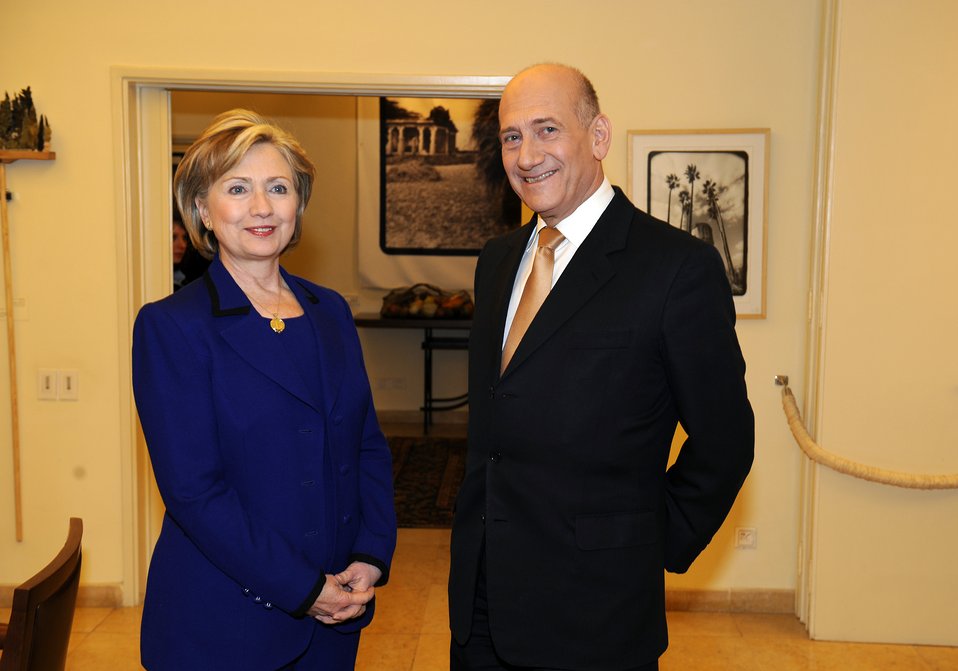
Secretary Clinton Visits Israeli Prime Minister Residence

U.S. Secretary of State Hillary Rodham Clinton during visits Prime Minister Ehud Olmert's Residence, Jerusalem, March 3, 2009.